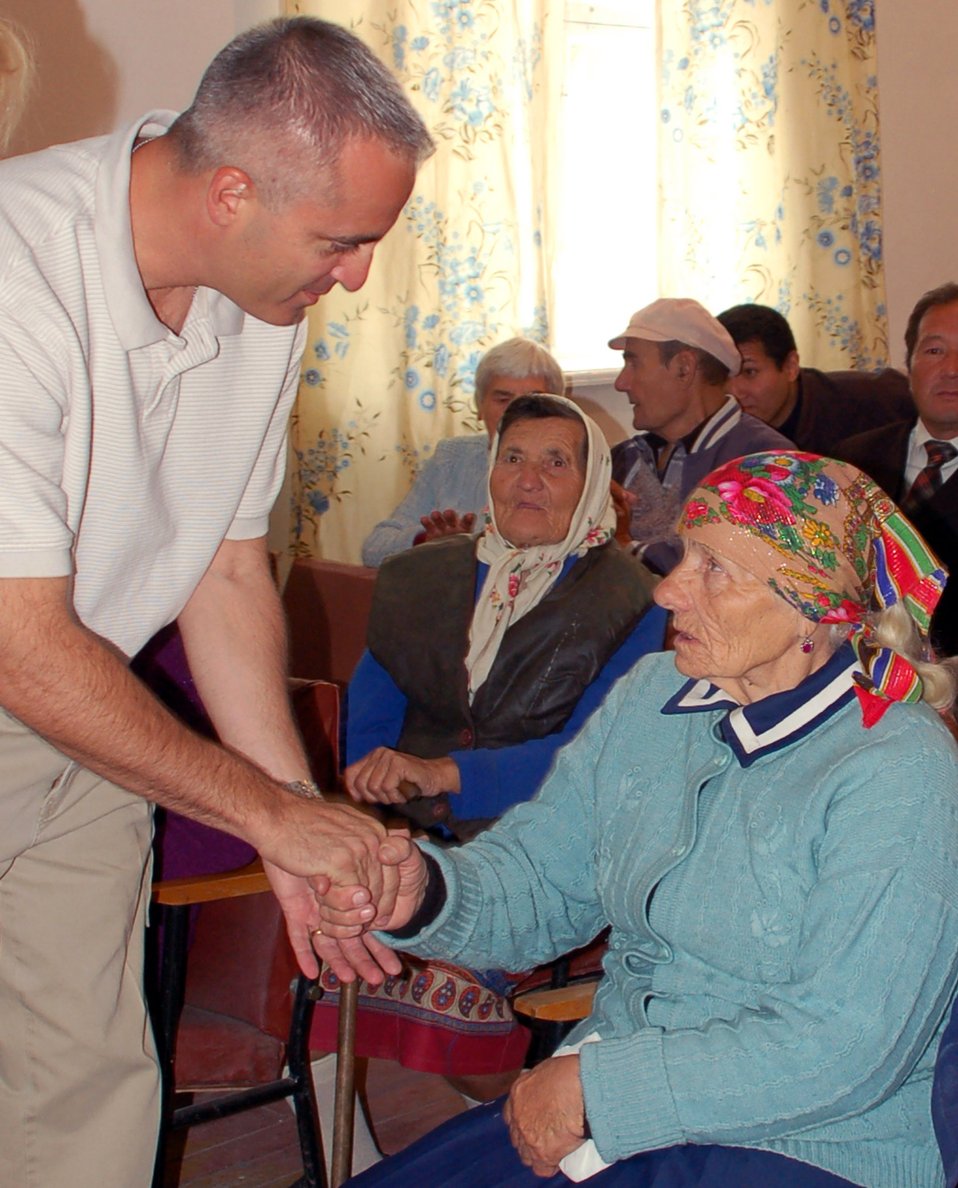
Manas Airmen honor village elderly

Col. Don Berchoff greets villagers Oct. 1 in the village of Oktyabra'skoe, Kyrgyzstan, during the local Elders' Day celebration. Airmen from Manas Air Base handed out packages including blankets, rice, pasta, sugar, tea, cookies, crackers, thermos', insulated mugs, and more to elderly citizens during the celebration.The colonel is the 376th Expeditionary Mission Support Group commander.